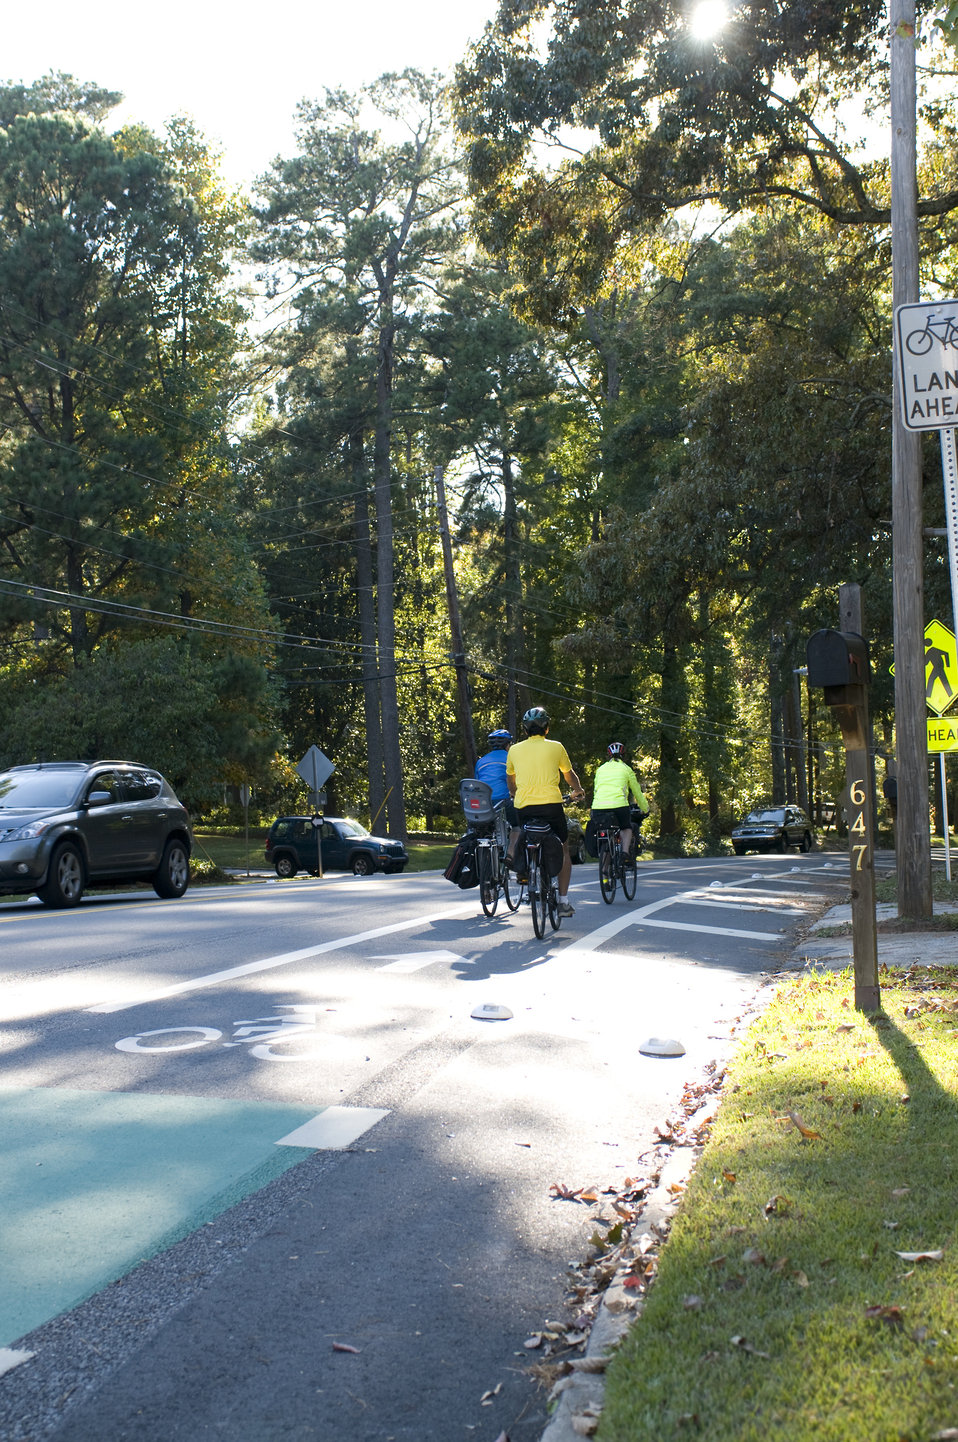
Photographed on a sunny Georgia day were three bicyclists who had embarked on a morning bicycle ride. Note the brightly-colored clothing they were wearing, which would help drivers see them more easily, as well as the protective, aerodynamic helmets, and the snug leggings, all adding to an overall safer bike ride for all. Also important, is that they were riding in the designated bicycle traffic lane, and abiding by the proper rules of the road, which govern drivers of both bicycles, and motorized vehicles.